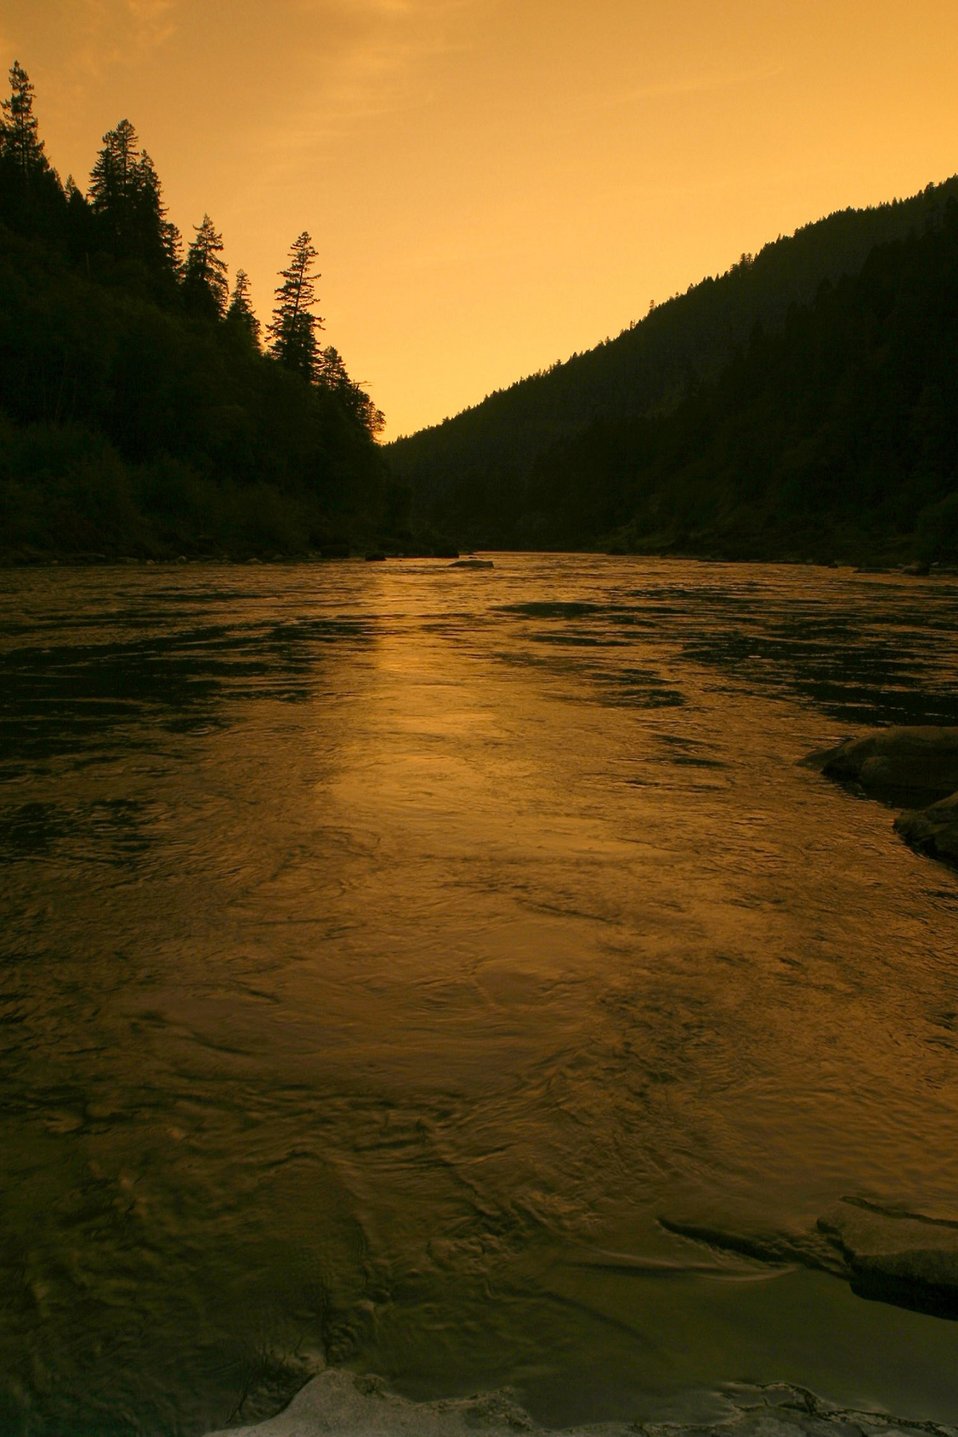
Wild section of the Rogue River from Grave Creek to Foster Bar May 19 to May 22.